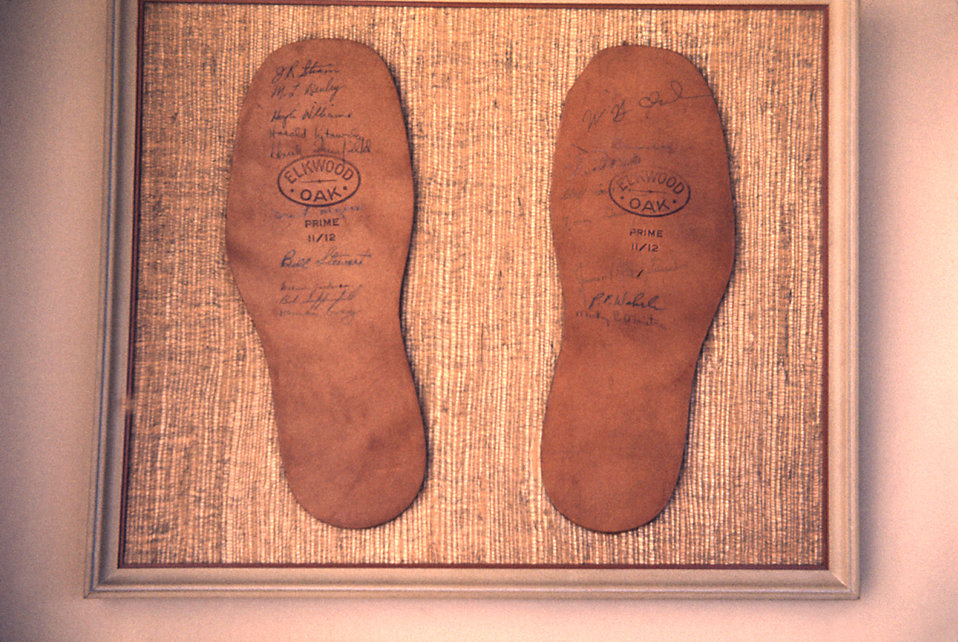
This commemorative shoe leather award was presented to the Epidemic Intelligence Service, (EIS) class of 1951.